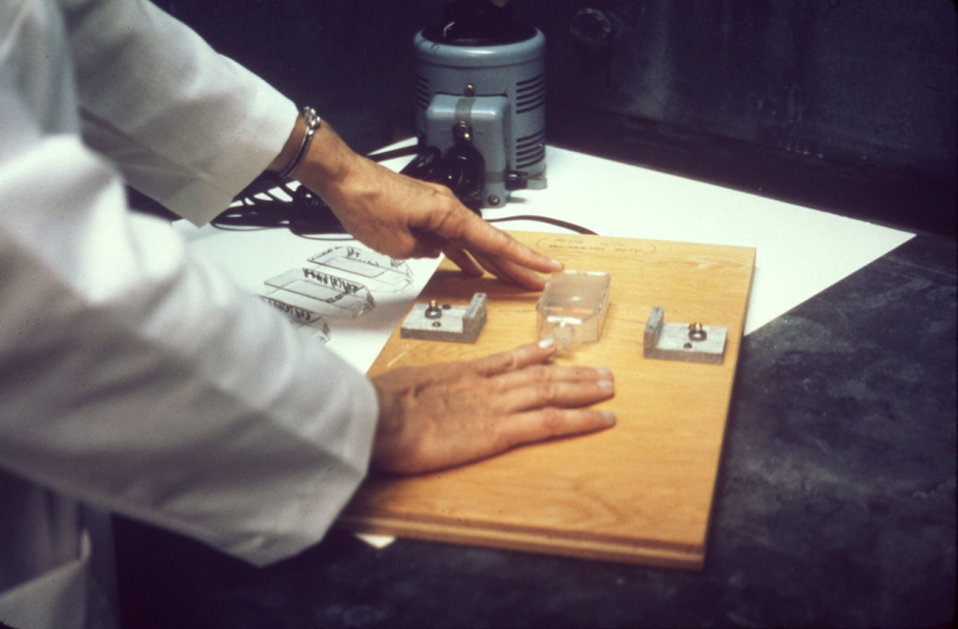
This laboratorian is demonstrating the removal of a Falcon� Flask top with a 'hot' wire during an amniotic fluid test.